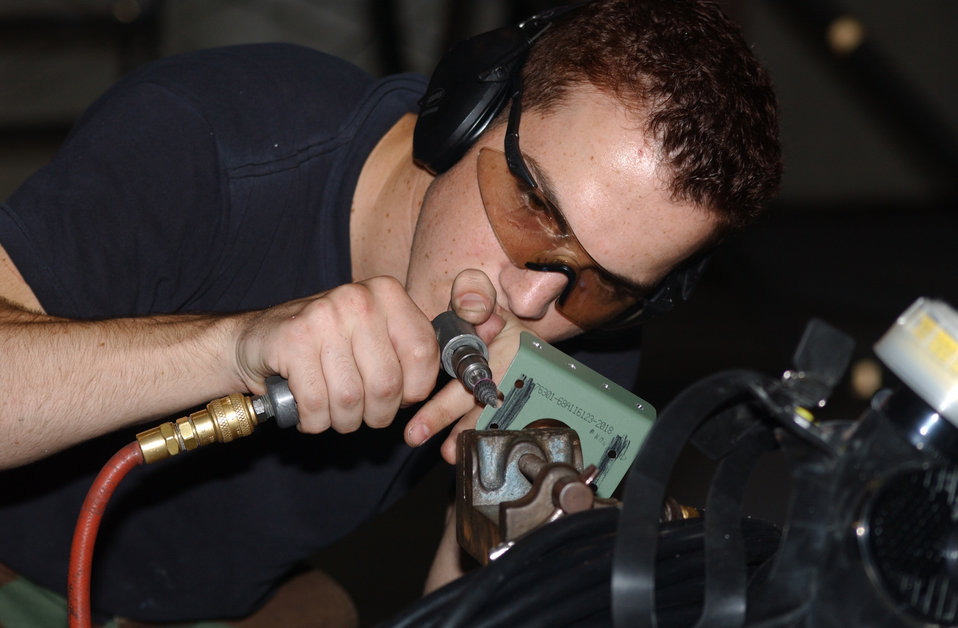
Puttin' the metal to the grind

KADENA AIR BASE, Japan -- Airman 1st Class Spencer Doyle grinds a bracket before placing it on an F-15C Eagle here recently. Airman Doyle is assigned to the 18th Equipment Maintenance Squadron.